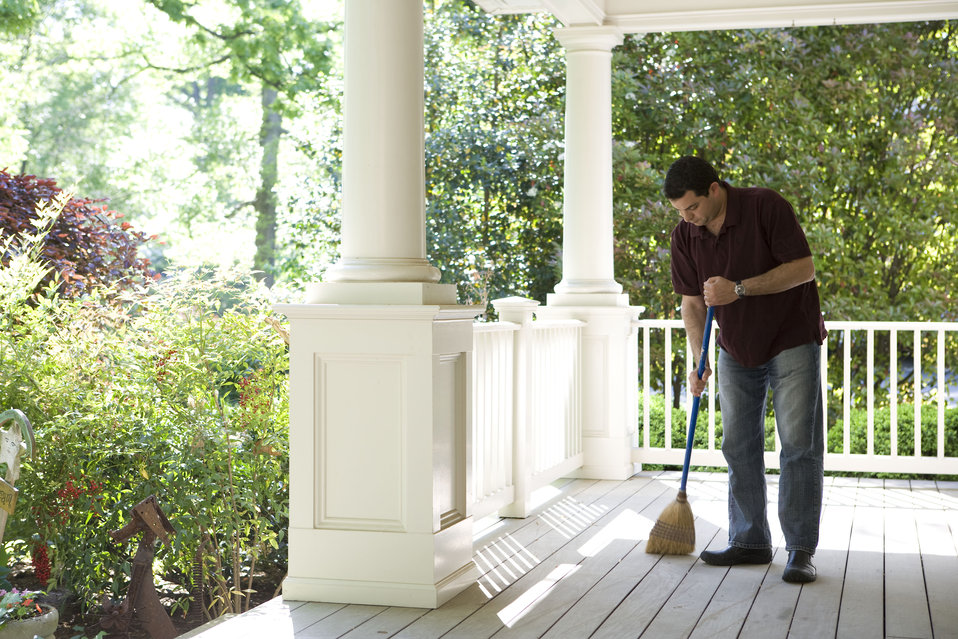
Home maintenance includes both the indoor, and as was the case here, outdoor environment, and is an ongoing process with which a homeowner need to keep up in order to provide for a healthy living space. Keeping your porch dust-free reduces the amount of contaminants tracked into the house.This man was in the process of cleaning his home's porch using a broom, as well as a water hose. In this way, airborne particulates including dust and pollen, could be removed from this area of his home, reducing the detrimental effects upon his family's respiratory systems. These irritants can sometimes result in sinus infections, and asthma.